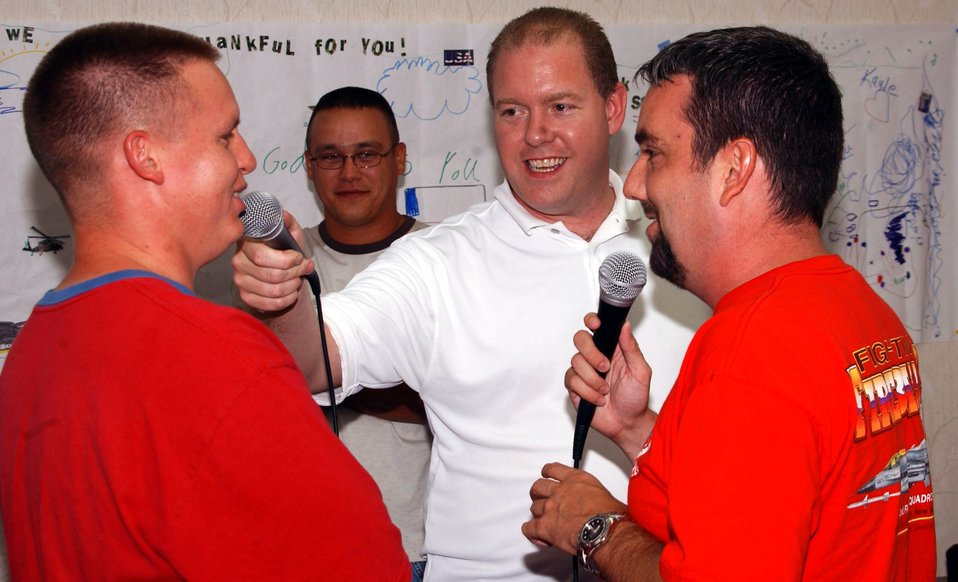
DJs go to Guam to thank Cannon Airmen again

Steve Rooney (center) and Duffy Moon (right) interview Staff Sgt. Michael Vaughn while he sends an audio greeting to his family Aug. 27 at Andersen Air Force Base, Guam. Mr. Rooney and Mr. Moon are radio personalities from Clovis, N.M., who visited Airmen deployed to Andersen AFB from Cannon AFB, N.M. Sergeant Vaughn is assigned to the 36th Expeditionary Aircraft Maintenance Squadron in Guam deployed from Cannon AFB.